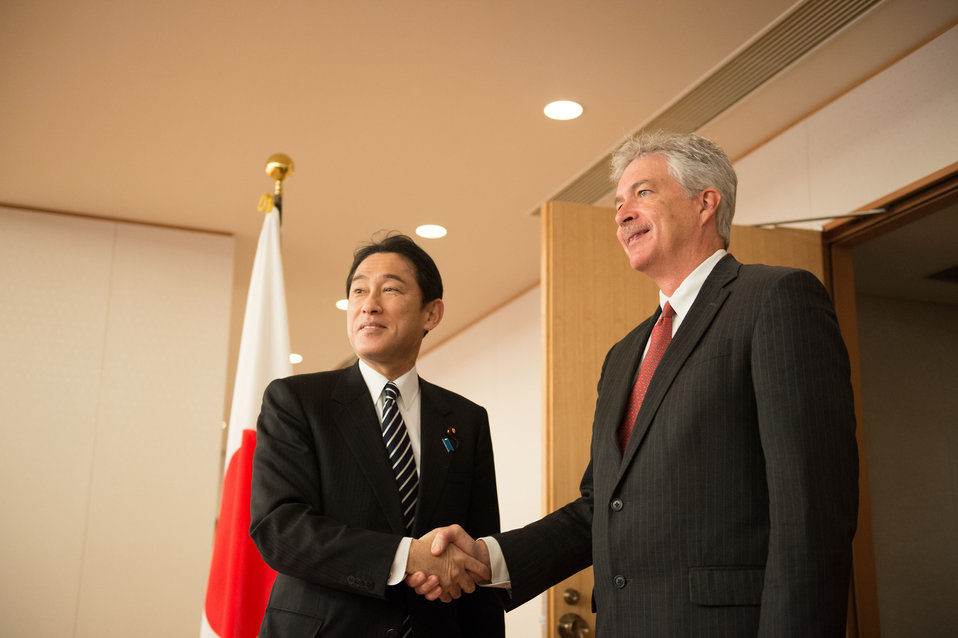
Deputy Secretary Burns Meets Japan’s Foreign Minister Kishida

U.S. Deputy Secretary of State William J. Burns greets Japan’s Minister for Foreign Affairs Fumio Kishida in Tokyo, Japan, on January 24, 2014.